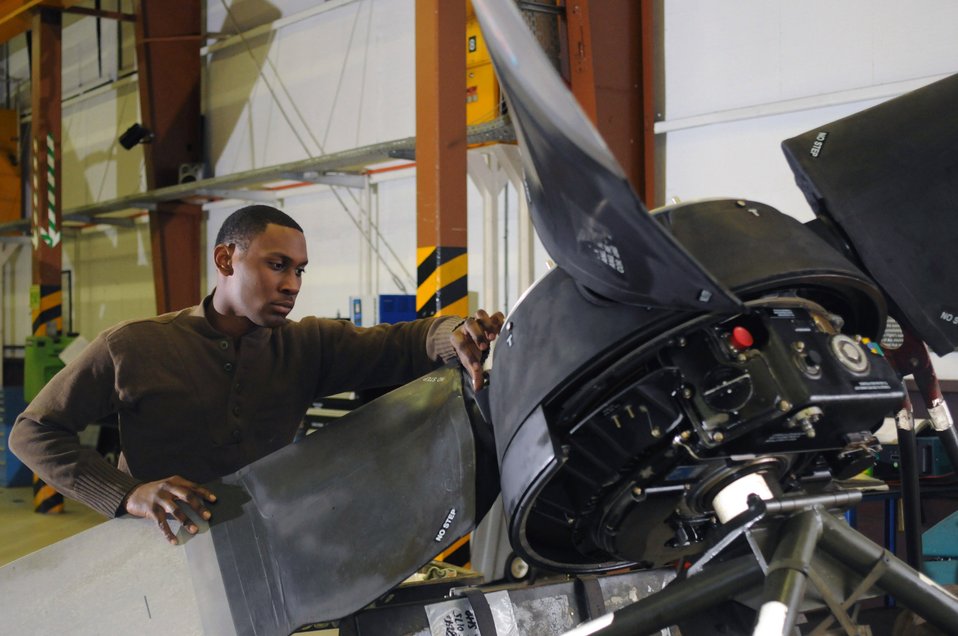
Turn, turn and turn

Airman 1st Class Jeremy Howard, propeller technician, services propeller blades Oct. 15 at Ramstein Air Base, Germany. More than 200 propellers a year are repaired by the 86th Maintenance Squadron propeller shop.